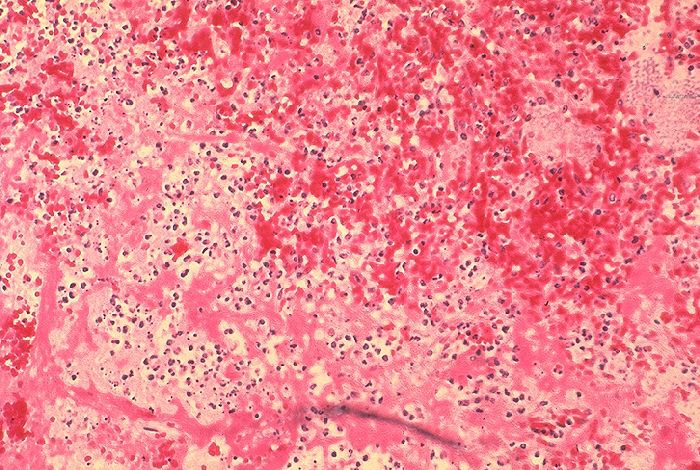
Histopathology of spleen in fatal human plague